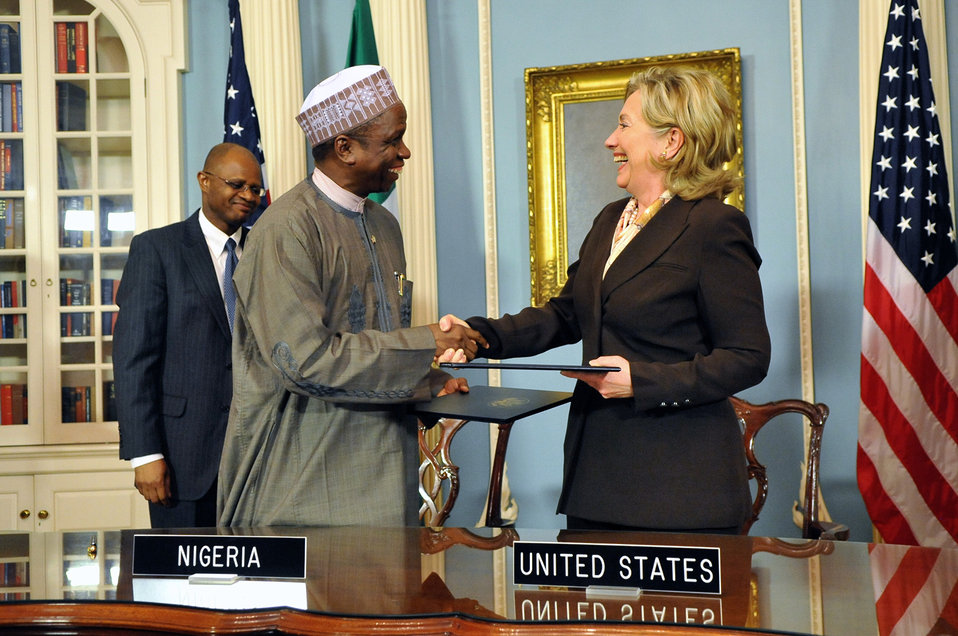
Secretary Clinton Meets With Nigerian Secretary to the Federal Government

U.S. Secretary of State Hillary Rodham Clinton holds a bilateral meeting with Nigerian Secretary to the Federal Government Yayale Ahmed, at the U.S. Department of State in Washington, DC April 6, 2010.